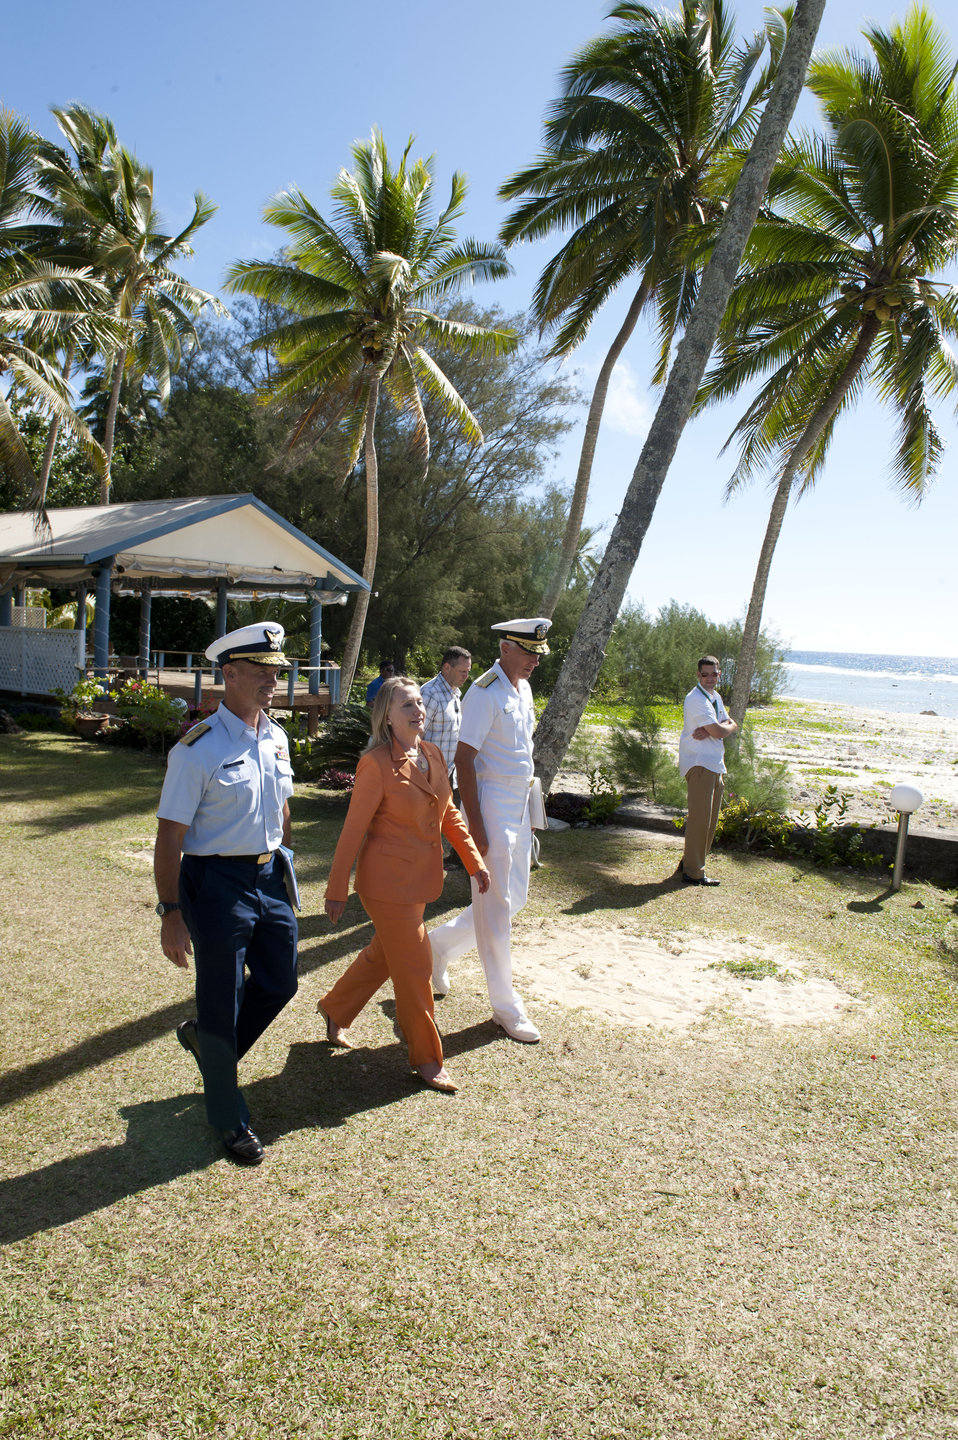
Secretary Clinton Delivers Remarks on Peace and Security Partnerships in the Pacific

U.S. Secretary of State Hillary Rodham Clinton walks with Rear Admiral Charles W. Ray, U.S. Coast Guard, and Admiral Samuel J. 'Sam' Locklear III, Commander U.S. Pacific Command, at an event commemorating U.S. peace and security partnerships in the Pacific at Tamarind House in Rarotonga, Cook Islands, August 31, 2012.